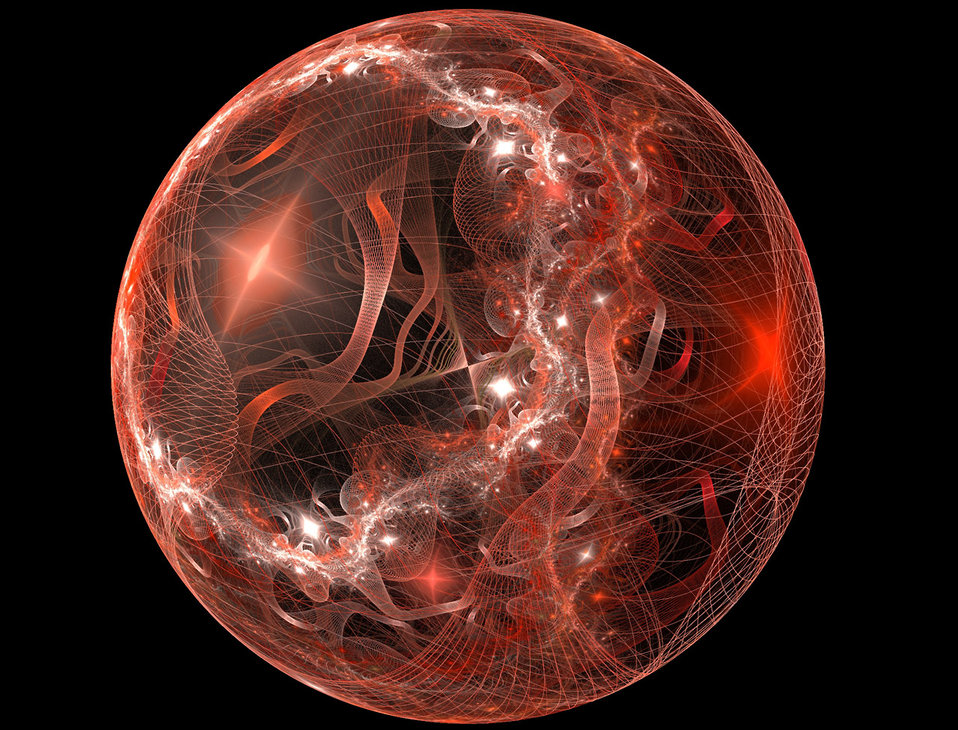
Red ball

A red ball with detail fractal.